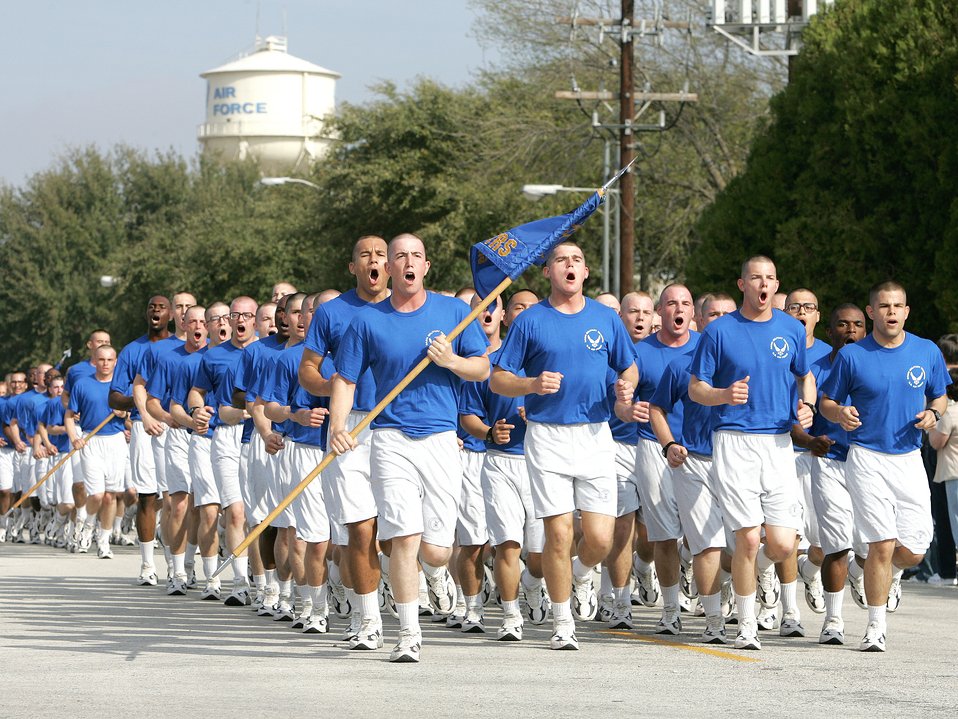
Airmen's Run

Airmen with the 331st Training Squadron's Flight 217 sing cadence Thursday, March 2, 2006, as they complete their last physical fitness requirement, a 2.5-mile run, before graduating from basic military training at Lackland Air Force Base, Texas.